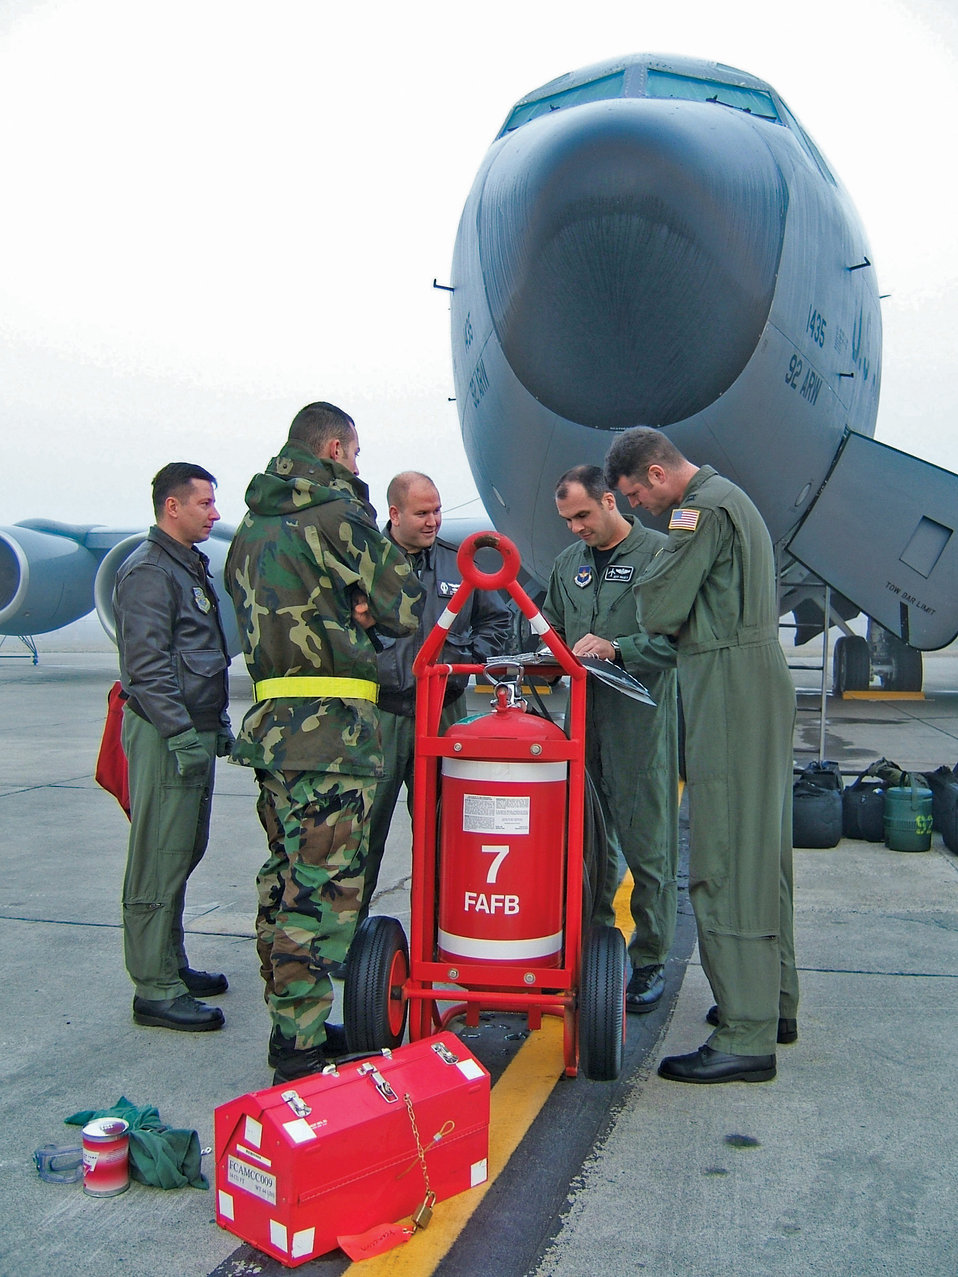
Tankers retrain

FAIRCHILD AIR FORCE BASE, Wash. -- Captains Jay Butterfield and Jeff Paget (left and far left), and 509th Weapons Squadron cadre, review a KC-135 Stratotanker's maintenance records with a crew chief from the 92nd Aircraft Maintenance Squadron. The captains are KC-135 Weapons Instructor Course students at the squadron here.